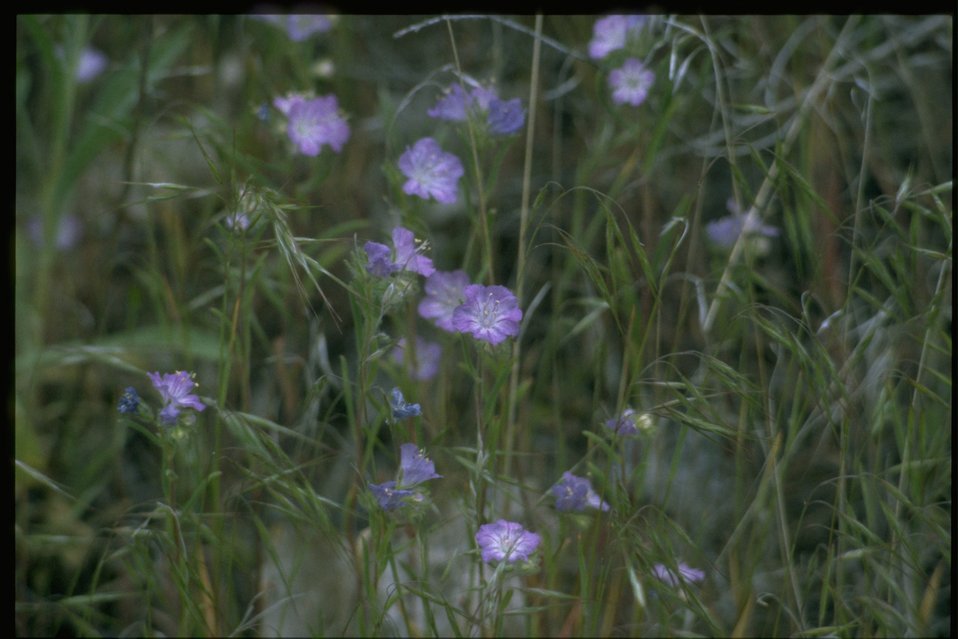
Medium shot of Phacelia habitat.